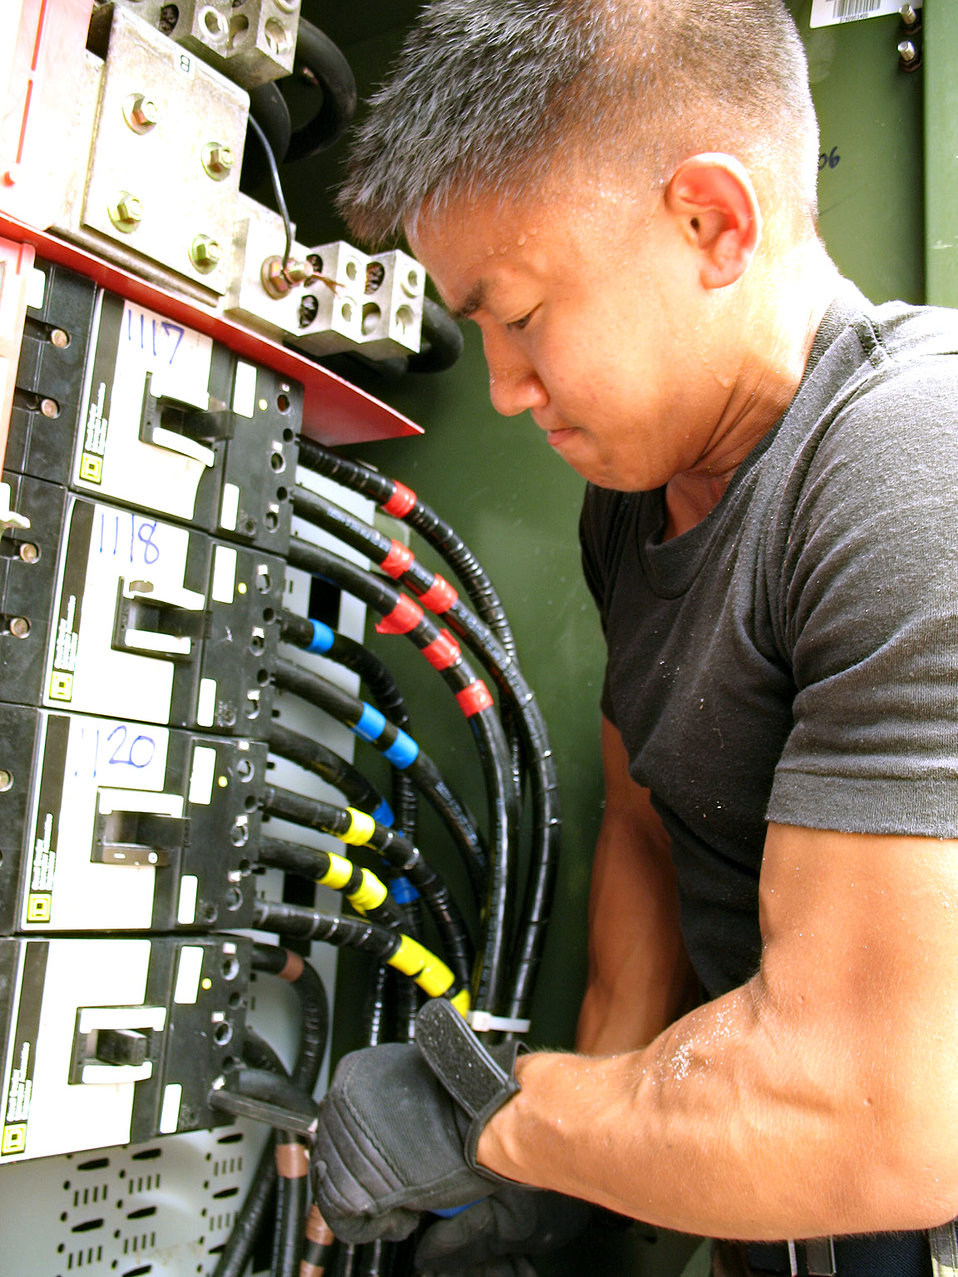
Young Airman excels, learns at Wake Island

Airman 1st Class Alex Jaime wrestles an electrical cable into place in a transformer on Wake Island Sept. 17. Airman Jaime is a member of the damage assessment team deployed to the atoll from Hickam Air Force Base, Hawaii, to estimate the cost of damage left by Super Typhoon Ioke. He is assigned to the 15th Civil Engineer Squadron.